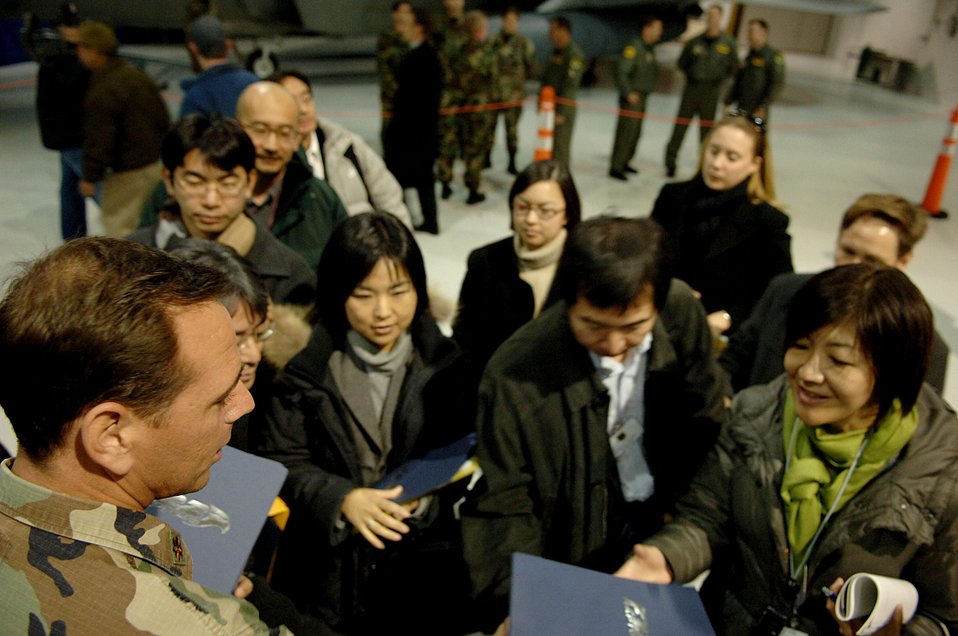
Raptor showcased for Japanese

Maj. Wesley Miller passes out press guides to Japanese media prior to a press conference Jan. 31 with F-22 Raptor maintainers and pilots from the 27th Fighter Squadron, Langley Air Force Base, Va. Twelve Raptors and 250 Airmen from the squadron will be deploying to Kadena Air Base later this month. The major is with the 1st Fighter Wing Public Affairs office.